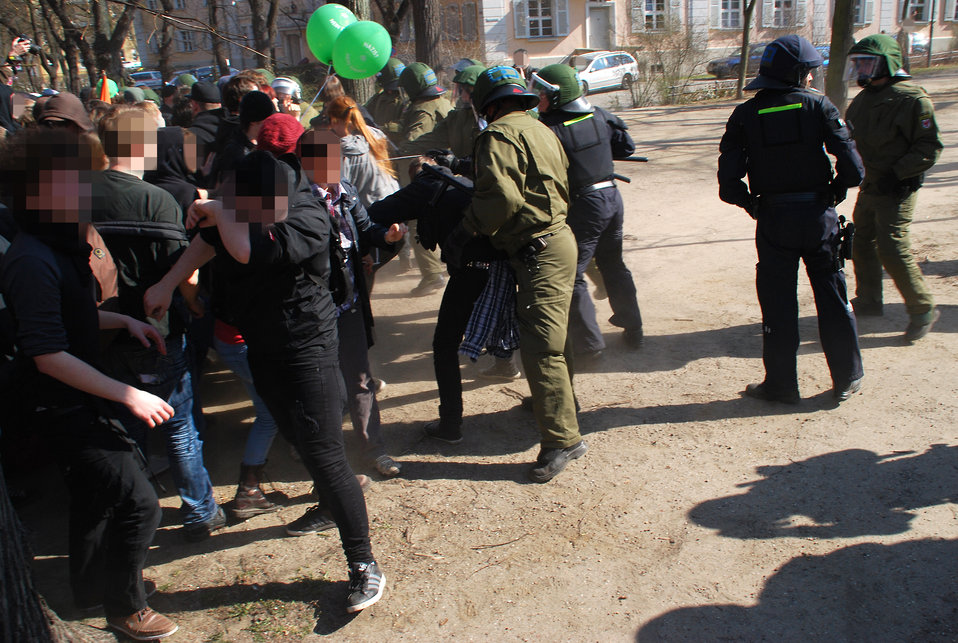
Proteste gegen den Nazi-Aufmarsch am 24.3.2012 in Frankfurt (Oder)